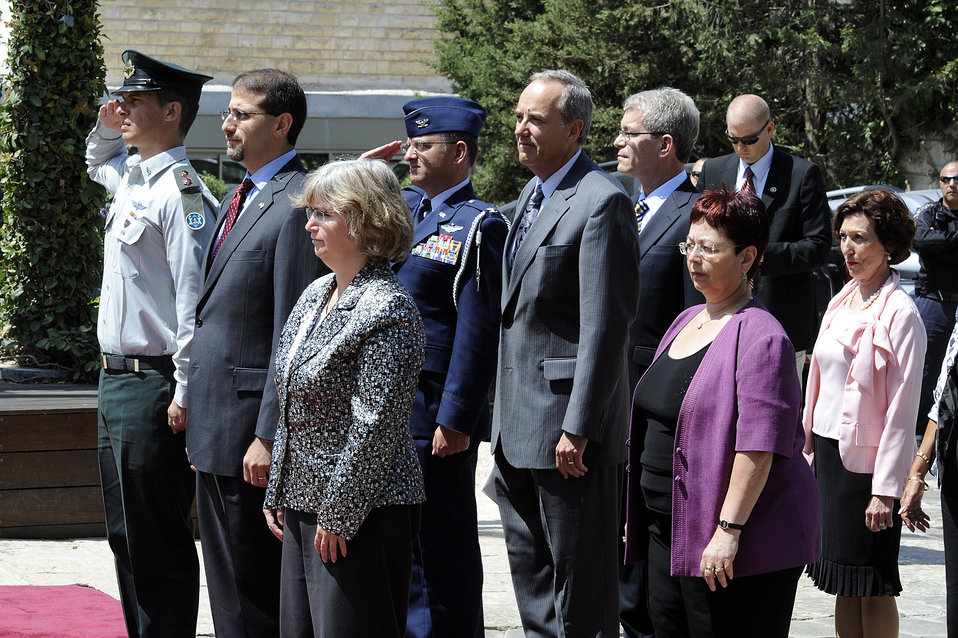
Ambassador Shapiro Prepares To Present His Credentials

U.S. Ambassador to Israel Daniel B. Shapiro prepares to present his credentials to Israeli President Shimon Peres at the President's residence in Jerusalem on August 3, 2011.